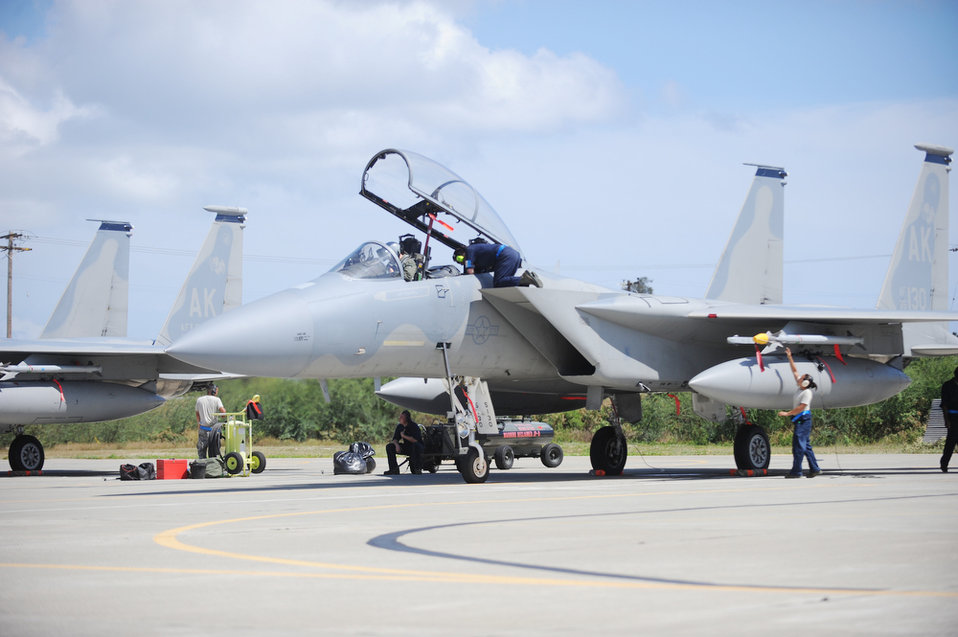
Airmen complete month-long training in 2 continents

Airmen conduct an inspection before clearing the F-15 Eagle for the next stage of checks March 23, 2010 while deployed to Joint Base Pearl Harbor-Hickam, Hawaii. The Airmen are assigned to the 19th Aircraft Maintenance Unit, 3rd Maintenance Squadron at Elmendorf Air Force Base, Alaska.